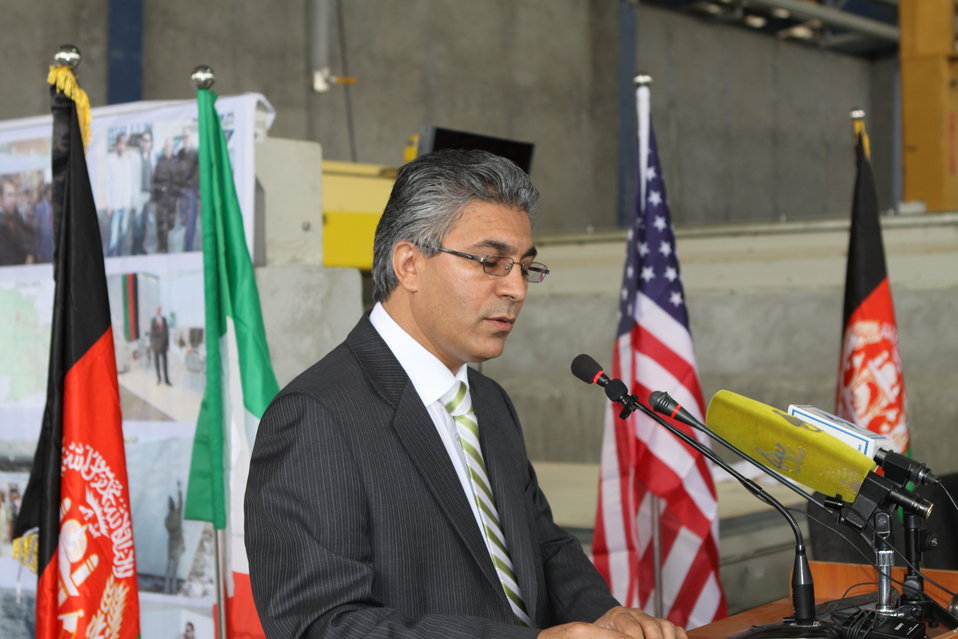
100525 Hirat Marble Conference 152